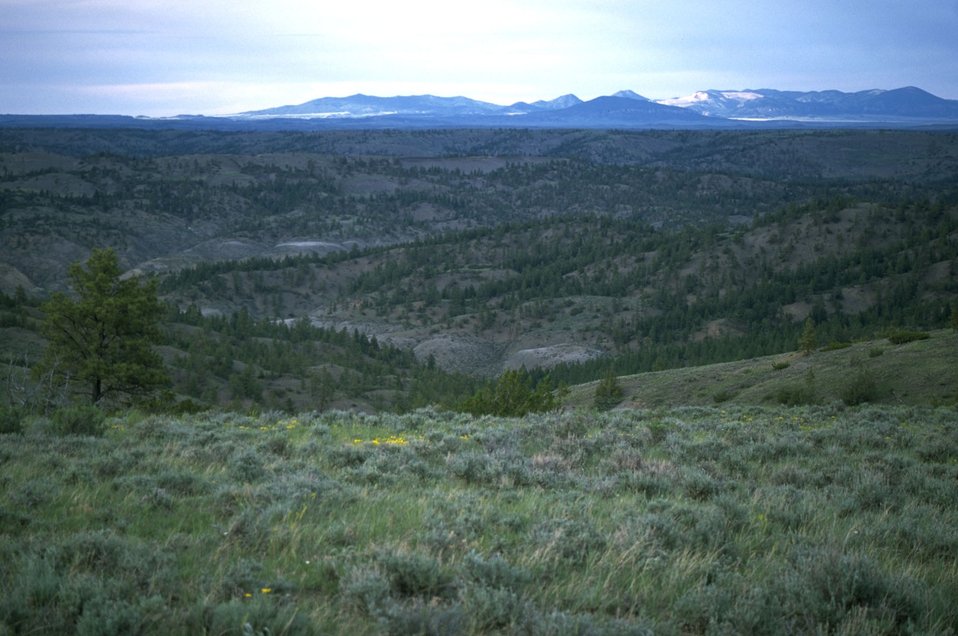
Grassy slopes in the Missouri Breaks area with the Little Rocky Mountains in the background